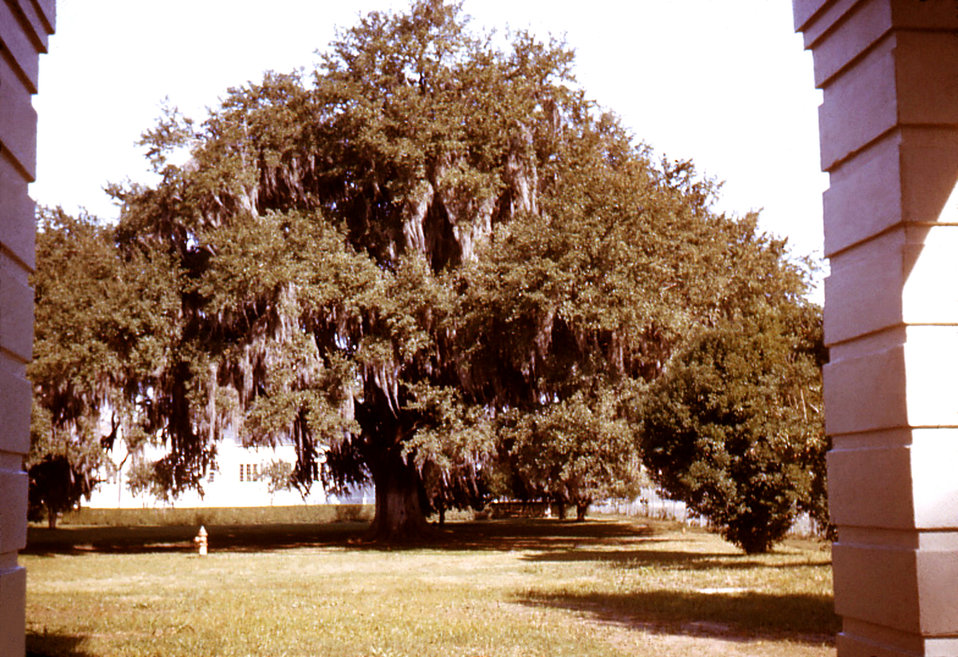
This was one of the historic ancient oak trees that adorned the grounds of the Carville, Louisiana Leprosarium. The age of these trees is unknown, but a tree this size could be more than a hundred years old.The National Hansen's Disease Museum's (NHDM) mission is to collect, preserve and interpret the medical and cultural artifacts of the Carville Historic District. In addition, we want to promote the understanding, identification, and treatment of Hansen's Disease (leprosy). We fulfill this mission by creating and maintaining museum displays, traveling exhibits, publications and a website in order to educate and inform the public on all levels.